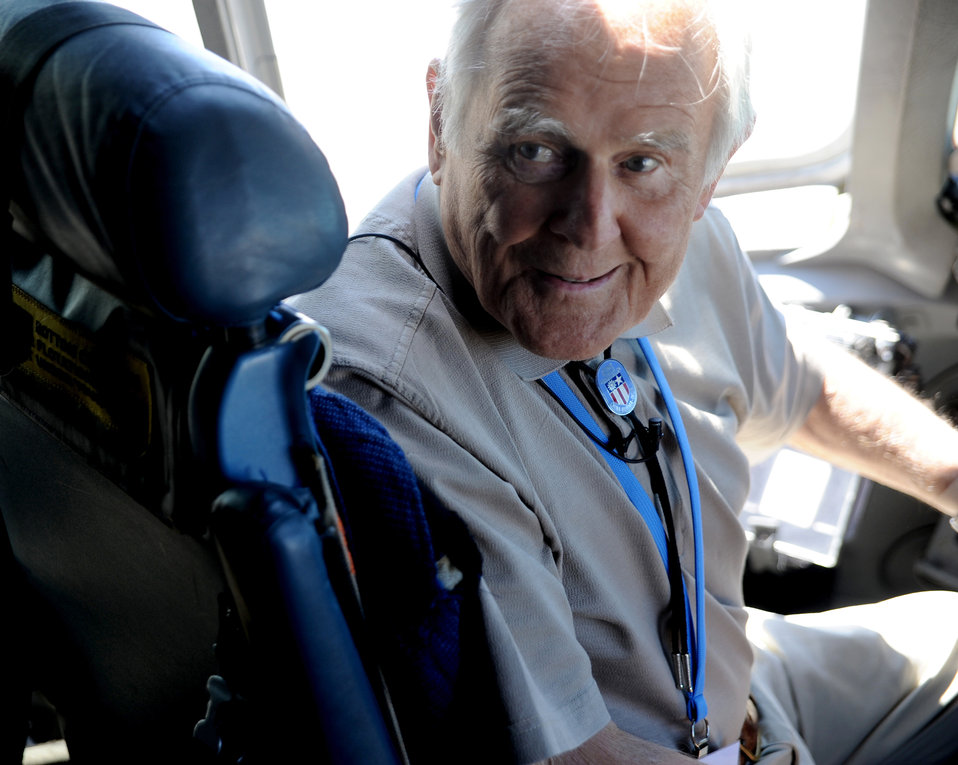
'Hump' pilots mark 65th reunion

Retired Col. Bill Thomas sits in the cockpit of a static C-17 Globemaster III, May 5, 2011 at Joint Base Charleston, S.C. Colonel Thomas was a World War II